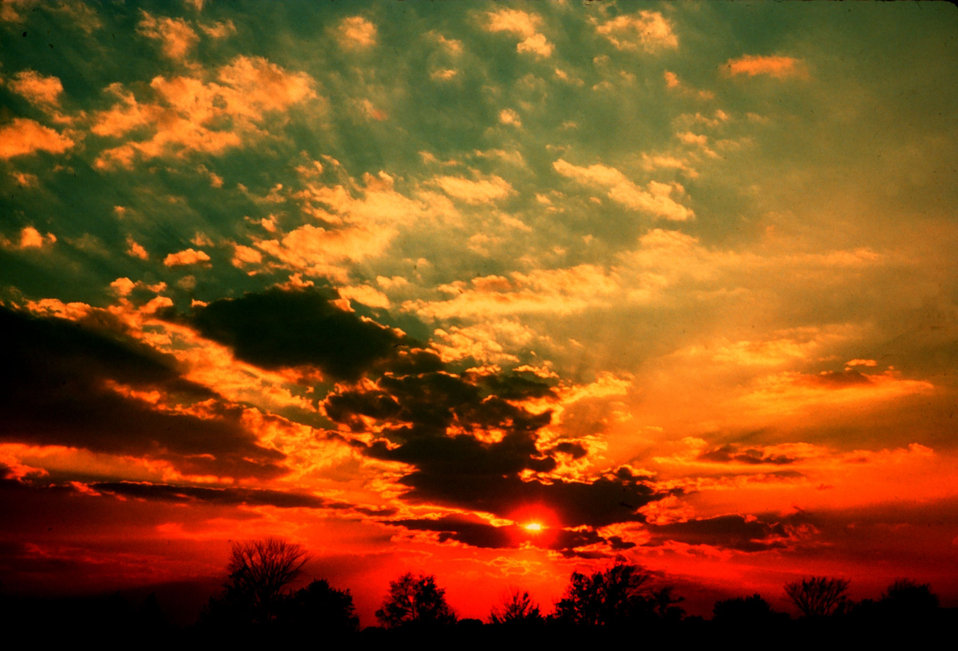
Altocumulus clouds